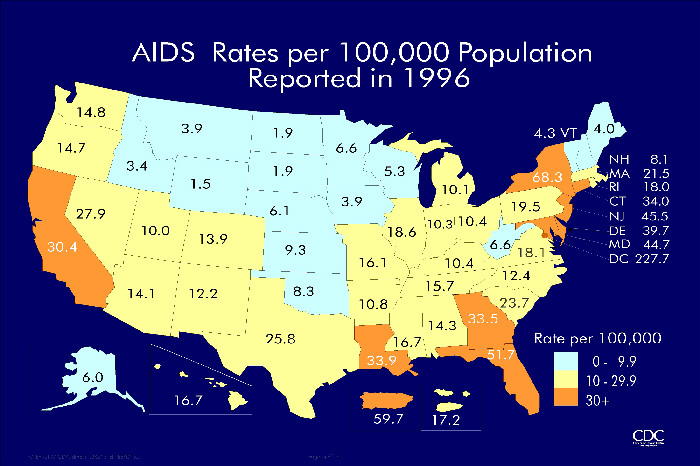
AIDS Rates per 100,000 Population Reported in 1996, United States